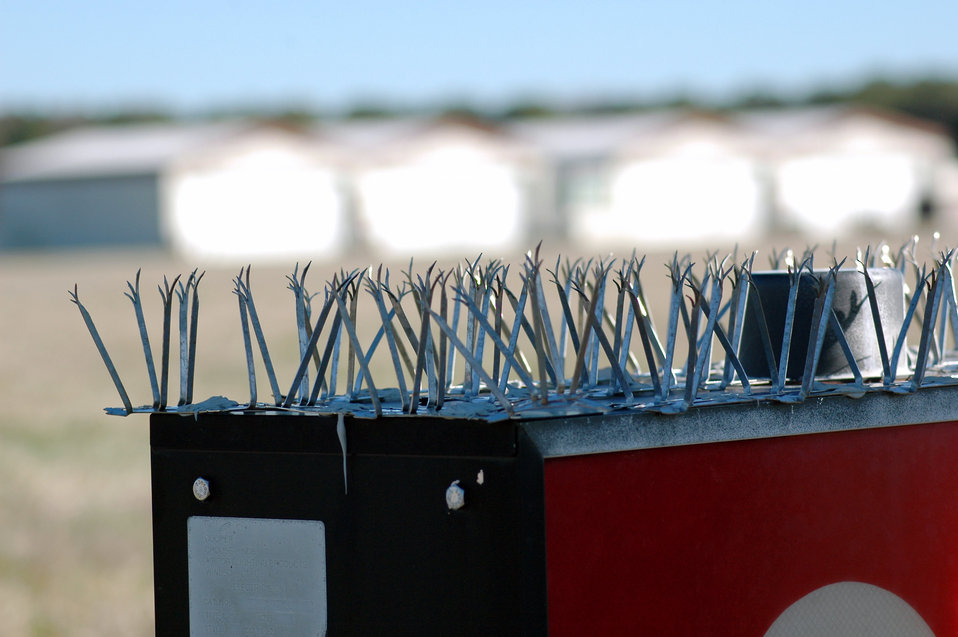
Langley officials fight to keep F-22s from being damaged

Spiny metal strips are tools are placed on any device where birds would perch, loof or roost near Langley Air Force Base, Va. They are placed by the Bird and Wildlife Aircraft Strike Hazard team to prevent bird strikes with aircraft.